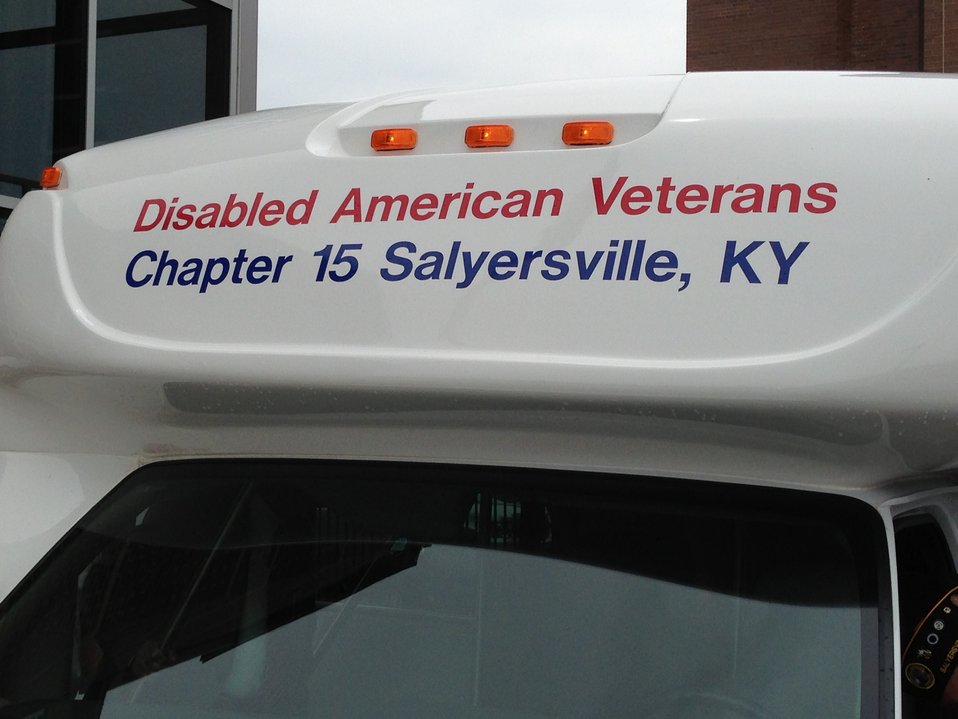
The front nameplate of the new DAV bus, funded through the USDA Community Facilities Program.